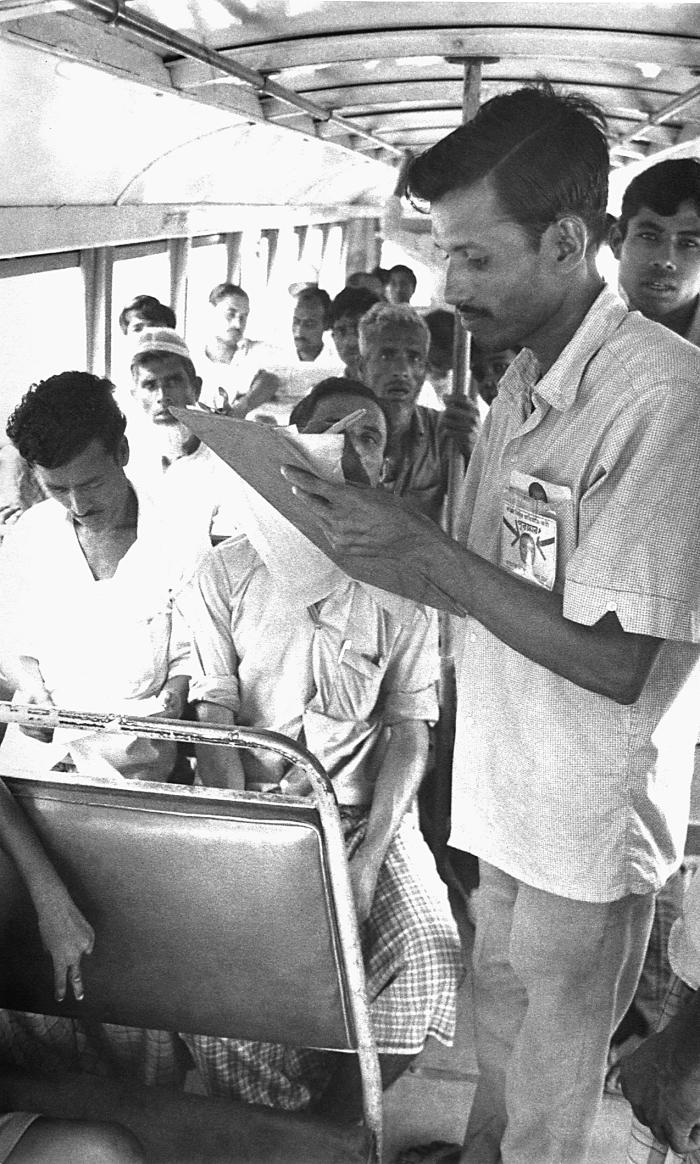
This 1975 image depicted a community volunteer smallpox eradication team member collecting data while inside a bus, regarding possible smallpox cases. A number of daily travelers were about to embark on this vehicle, so in a way, the fact that these villagers were stationary and seated, made the interrogatories easier, and a more orderly a process, rather than discussing the pertinent questions amongst a standing crowd. Buses are a common mode of mass transit between villages, and such queries were a common scene, which included the administration of vaccinations as well.